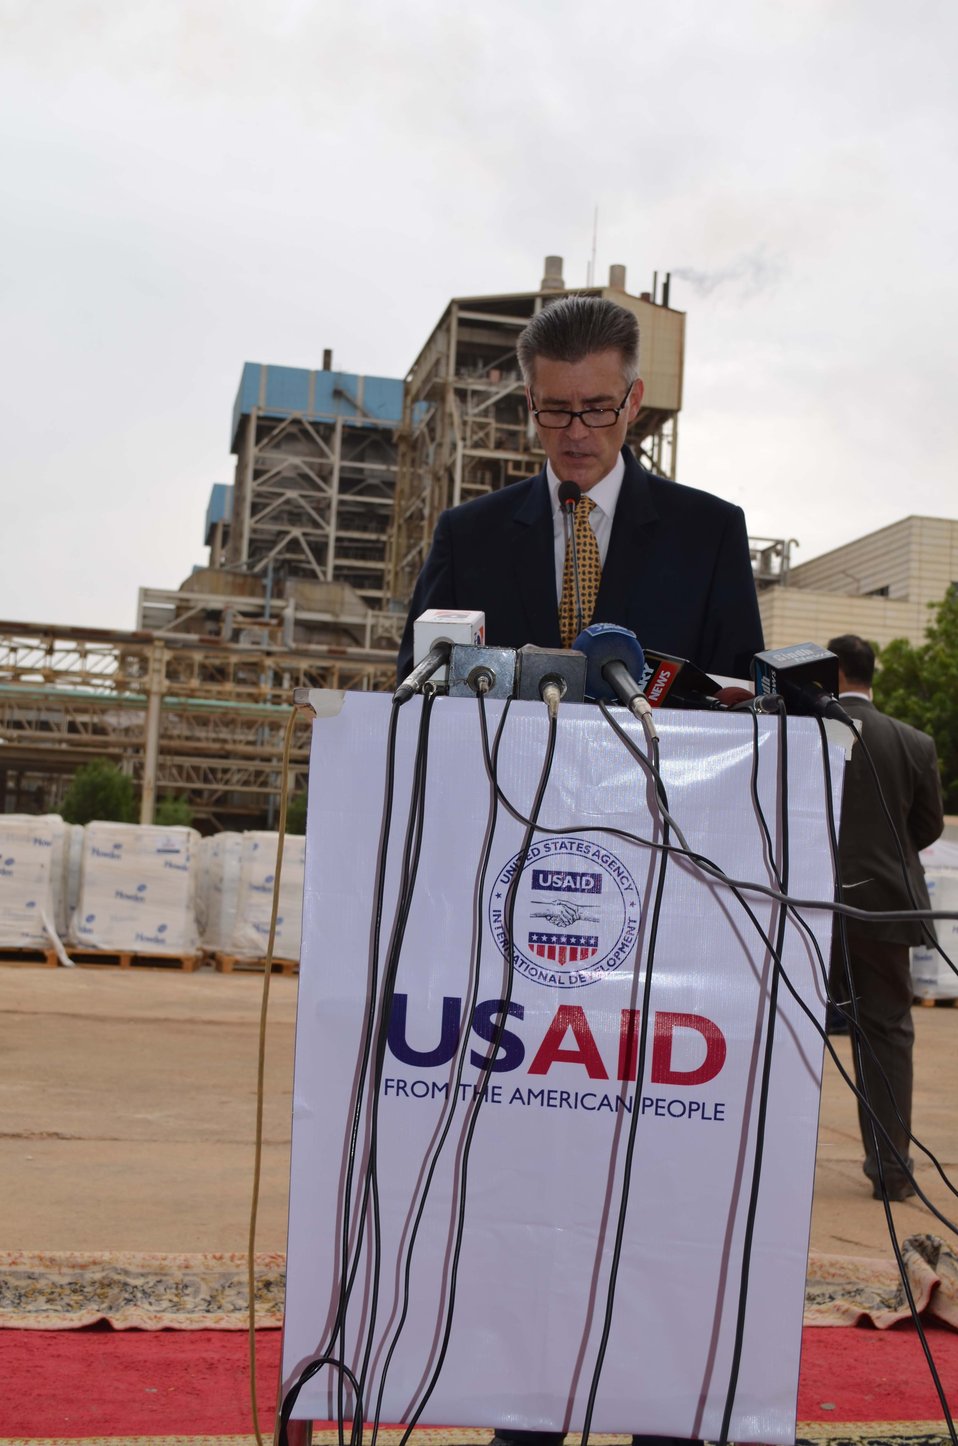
Ambassador Olson giving his remarks at the event